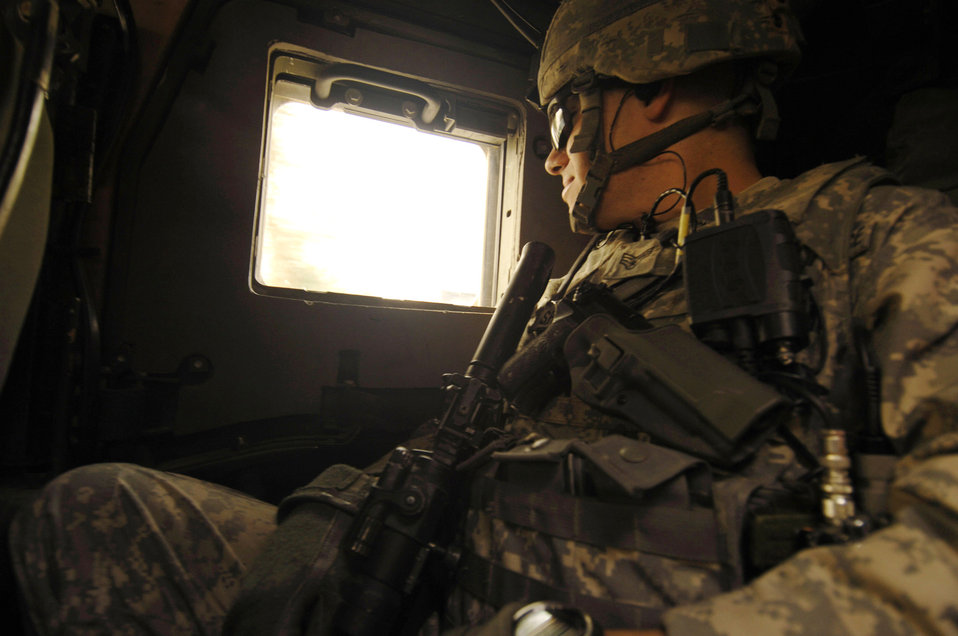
Reconstruction team aids Afghan communities

Senior Airman Robert Shuman observes activity outside his Humvee while on a canal assessment mission with the Nangarhar Provincial Reconstruction Team Nov. 10 in Afghanistan. The Nangarhar PRT is a joint team of Airman, Soldiers and representatives from the U.S. Department of State, Agency for International Development, and the Department of Agriculture. The team is responsible for helping the Afghanistan government improve security, governance and promote reconstruction in Nangarhar Province. The PRT assesses community needs, builds schools, government centers, roads, medical capabilities and basic infrastructure throughout Nangarhar; they also personally mentor Afghan government officials and security forces to provide the Afghan people with the state representation and security they need.